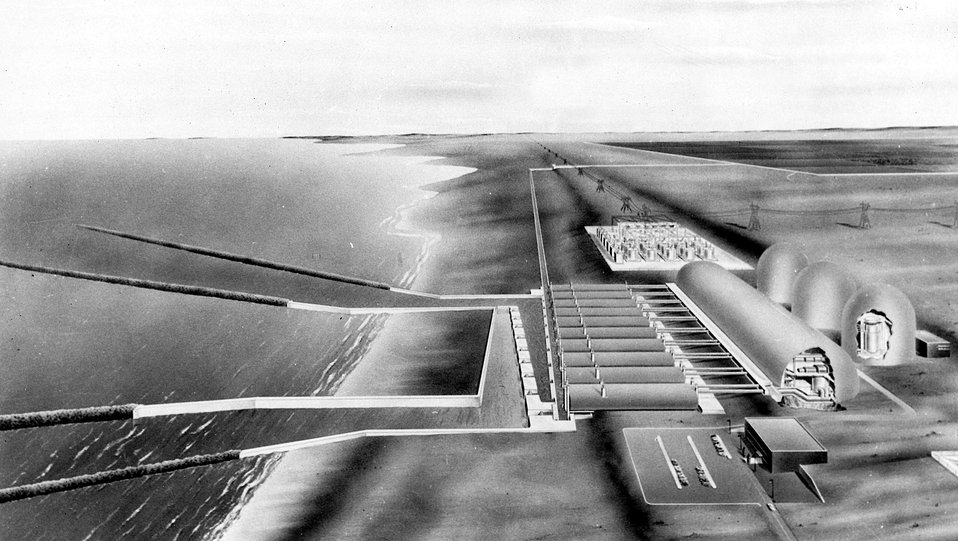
c. 1964